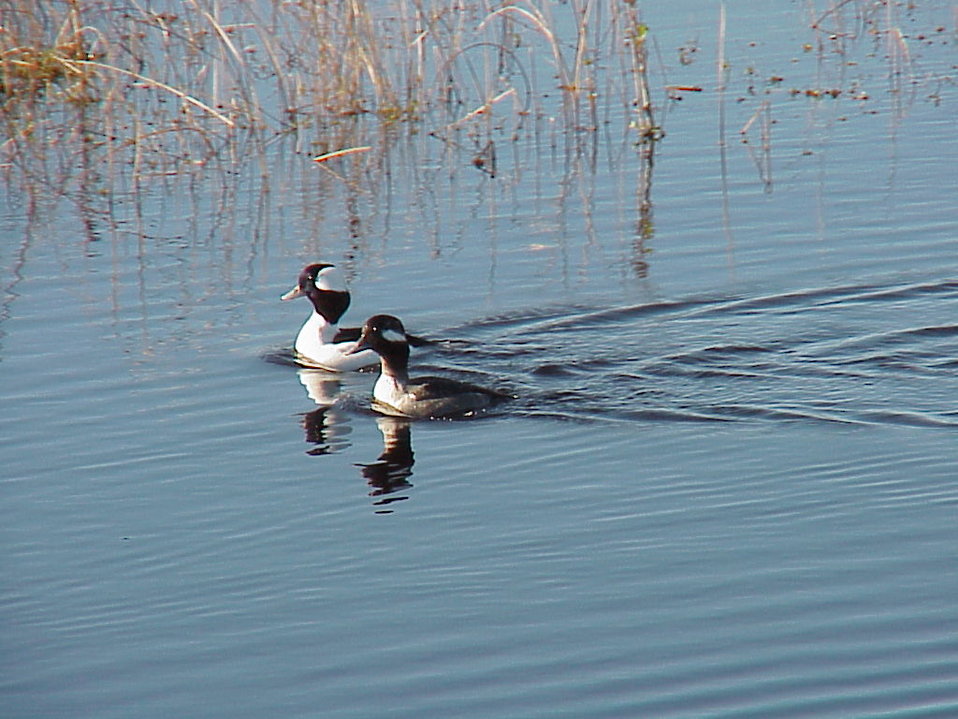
Buffleheads at Back Bay National Wildlife Refuge in Virginia.